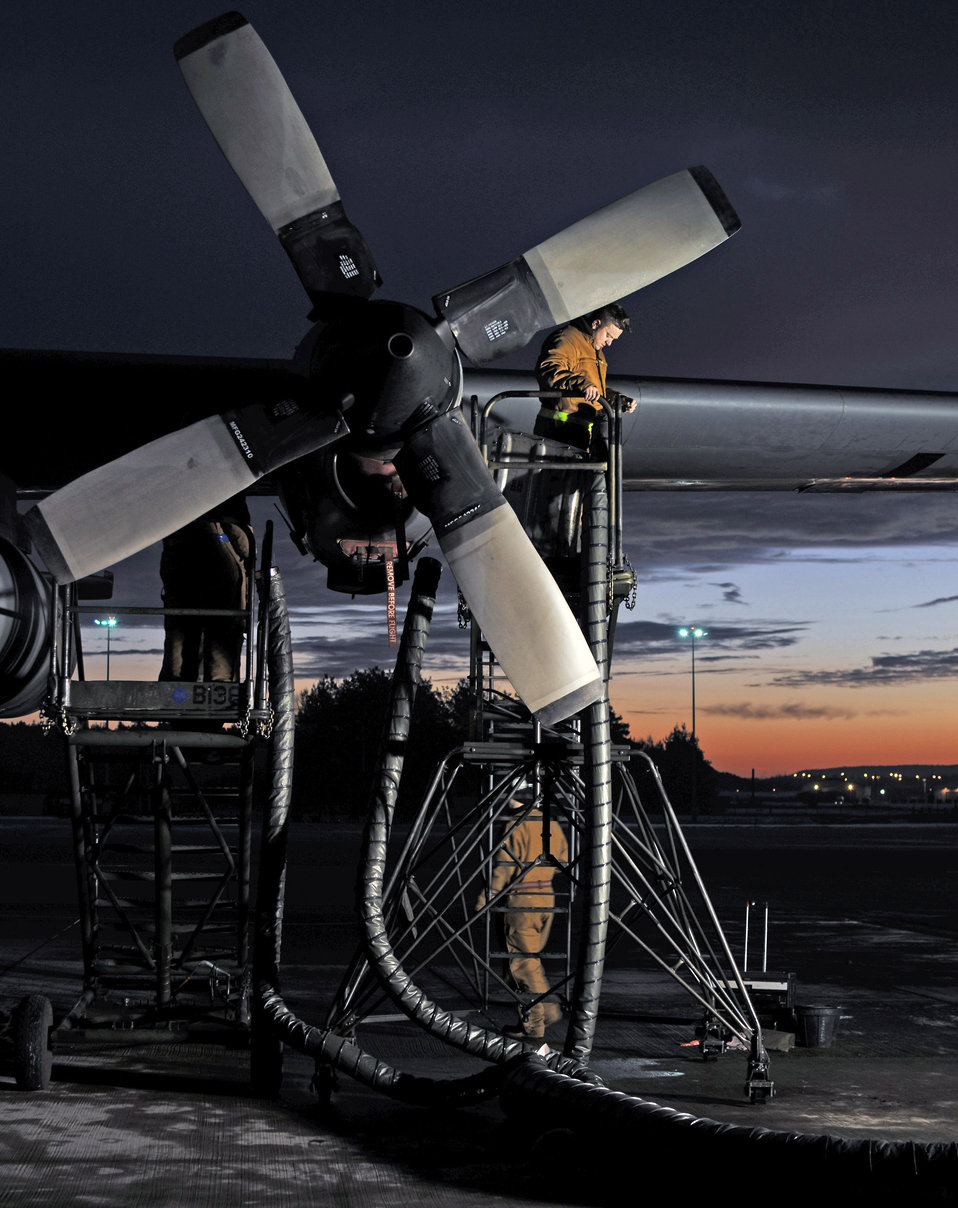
I need a wrench

Members of the 86th Aircraft Maintenance Squadron work on the engine of a C-130 Hercules Jan. 13 at Ramstein Air Base, Germany. The aircraft is the prime transport for air dropping troops and equipment into hostile areas.